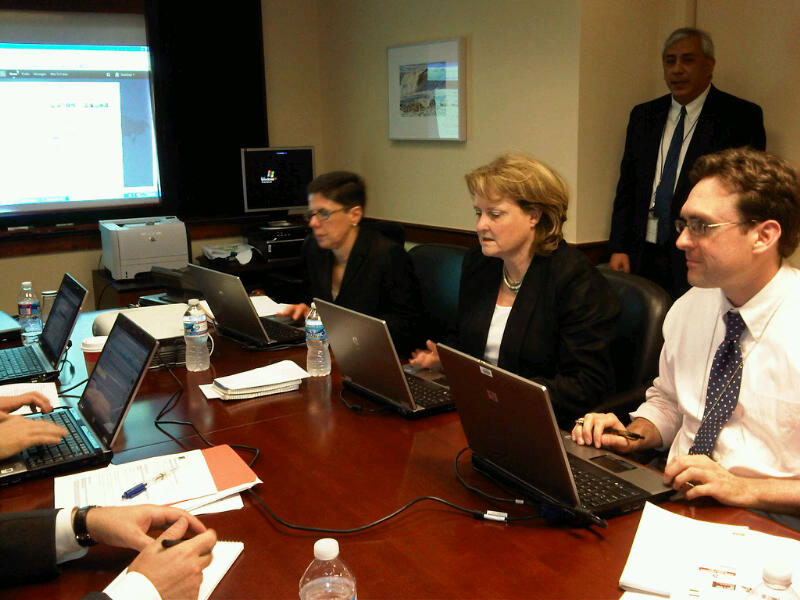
Under Secretary McHale Participates in the State Department's First Global 'Twitter QandA'

Under Secretary of State for Public Diplomacy and Public Affairs Judith Mchale, center, participates in the State Department's first global Twitter Q & A, at the U.S. Department of State in Washington, D.C., on June 29, 2011.The U.S. Department of State's main official Twitter feed, @StateDept, hosted the session.